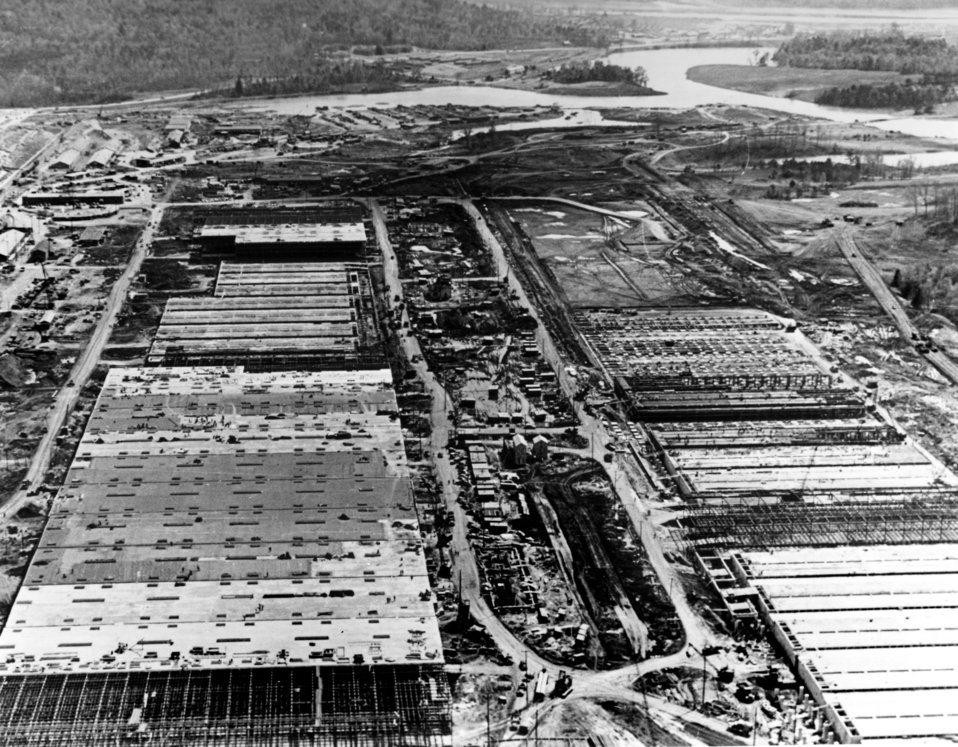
Aerial K-25 Plant 'U' Bldg Oak Ridge

235-3 DOE Photo by Ed Westcott Oak Ridge Tennessee 4-22-1944